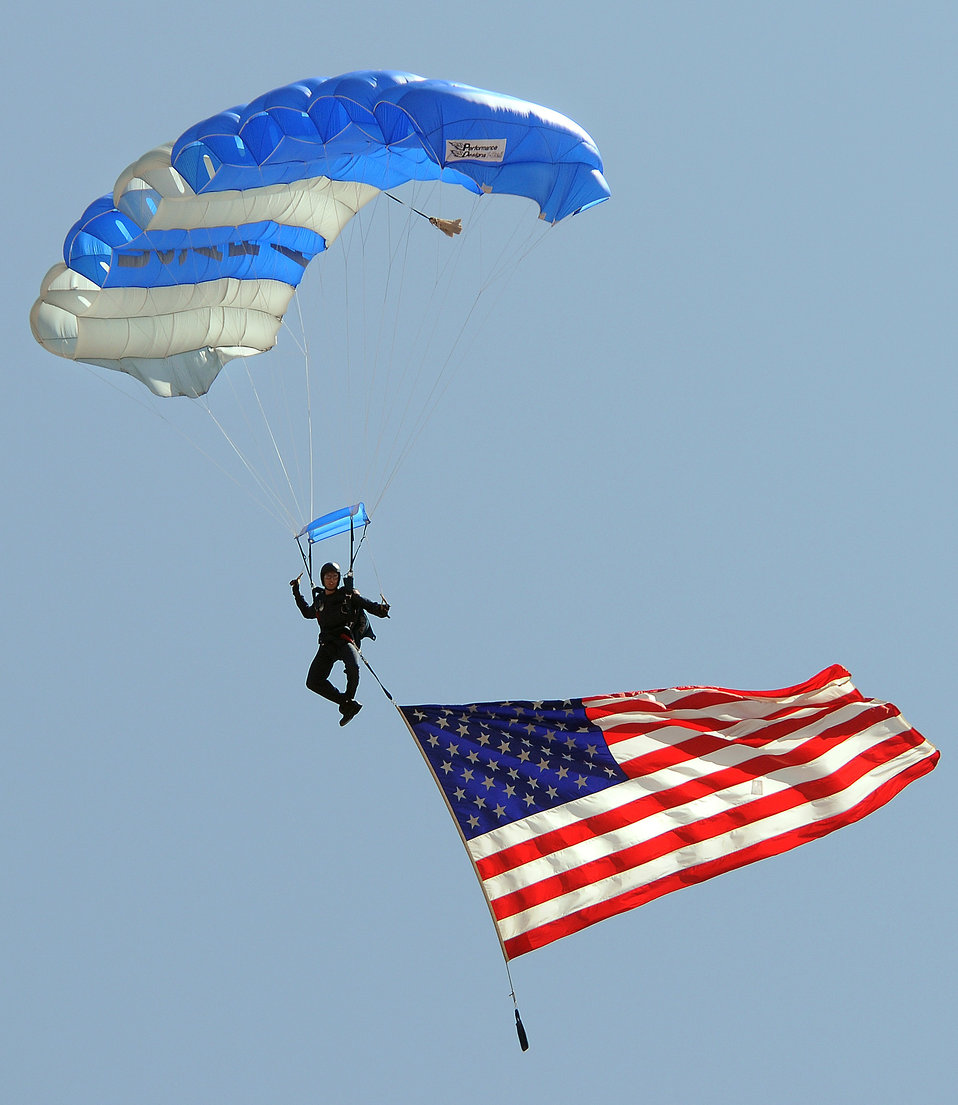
Wings of Blue to 'drop in' on BCS championship

The U.S. Air Force Academy's Wings of Blue parachute team will jump into the Bowl Championship Series championship game Jan. 7, 2010, at the Rose Bowl in Pasadena, Calif. The game will be televised on ABC affiliates at 6 p.m. Mountain Standard Time.